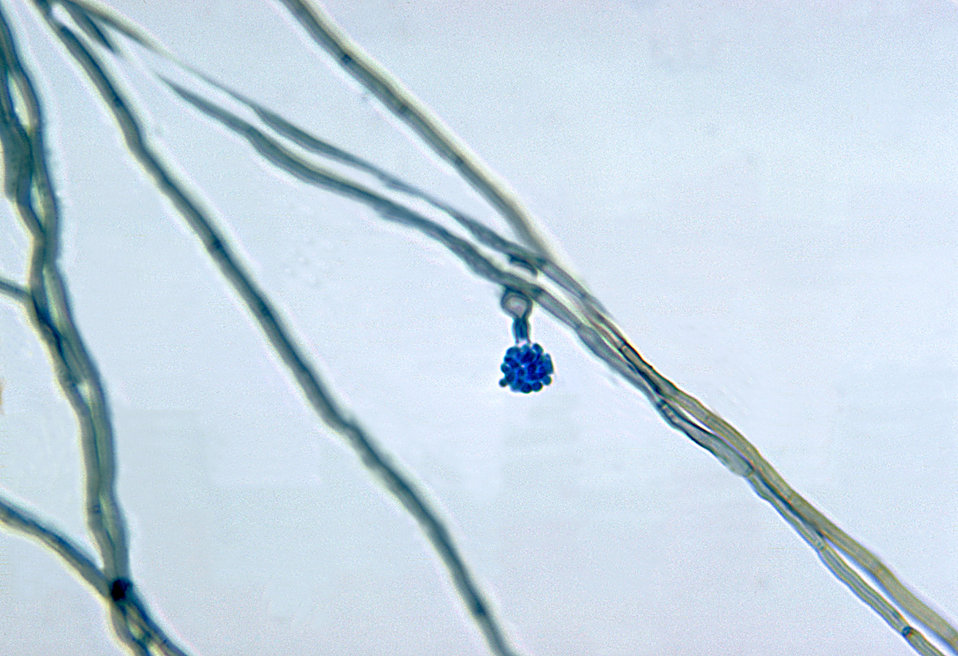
This slide culture of the fungus Fonsecaea pedrosoi, revealed the presence of a phialide with accompanying phialospores.